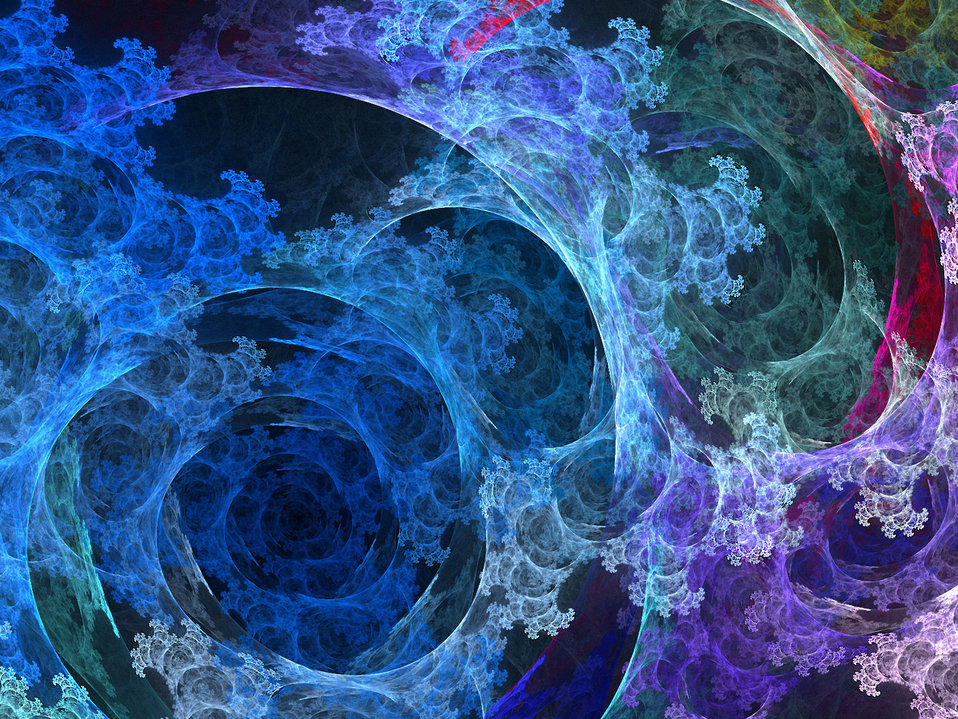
C.e. abstract lace

Created with apophysis.